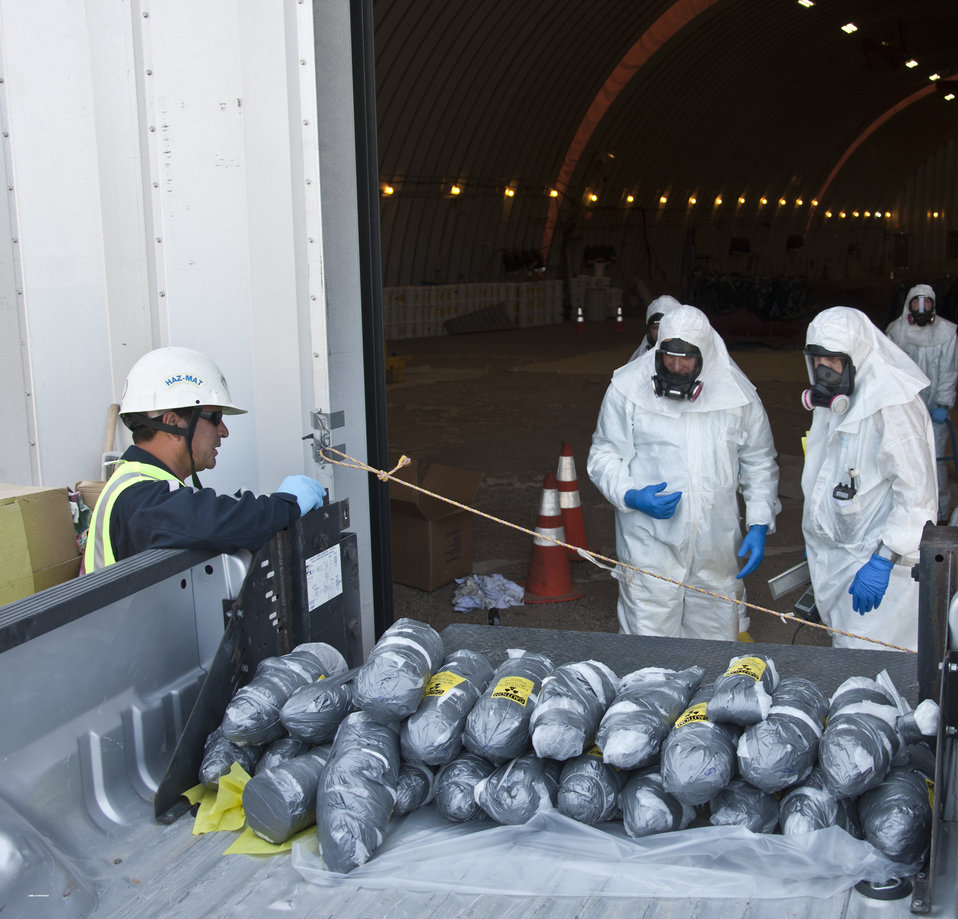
Los Alamos Dig Unveils Items Ranging from Military Trucks to Toothbrush

Dozens of inert naval artillery shells have been excavated.

In a $110 million Recovery Act project at Los Alamos National Laboratory, workers are excavating a waste disposal site known as Material Disposal Area B (MDA-B). Completion of the MDA-B cleanup will reduce EM’s legacy footprint by more than 260,000 square feet.